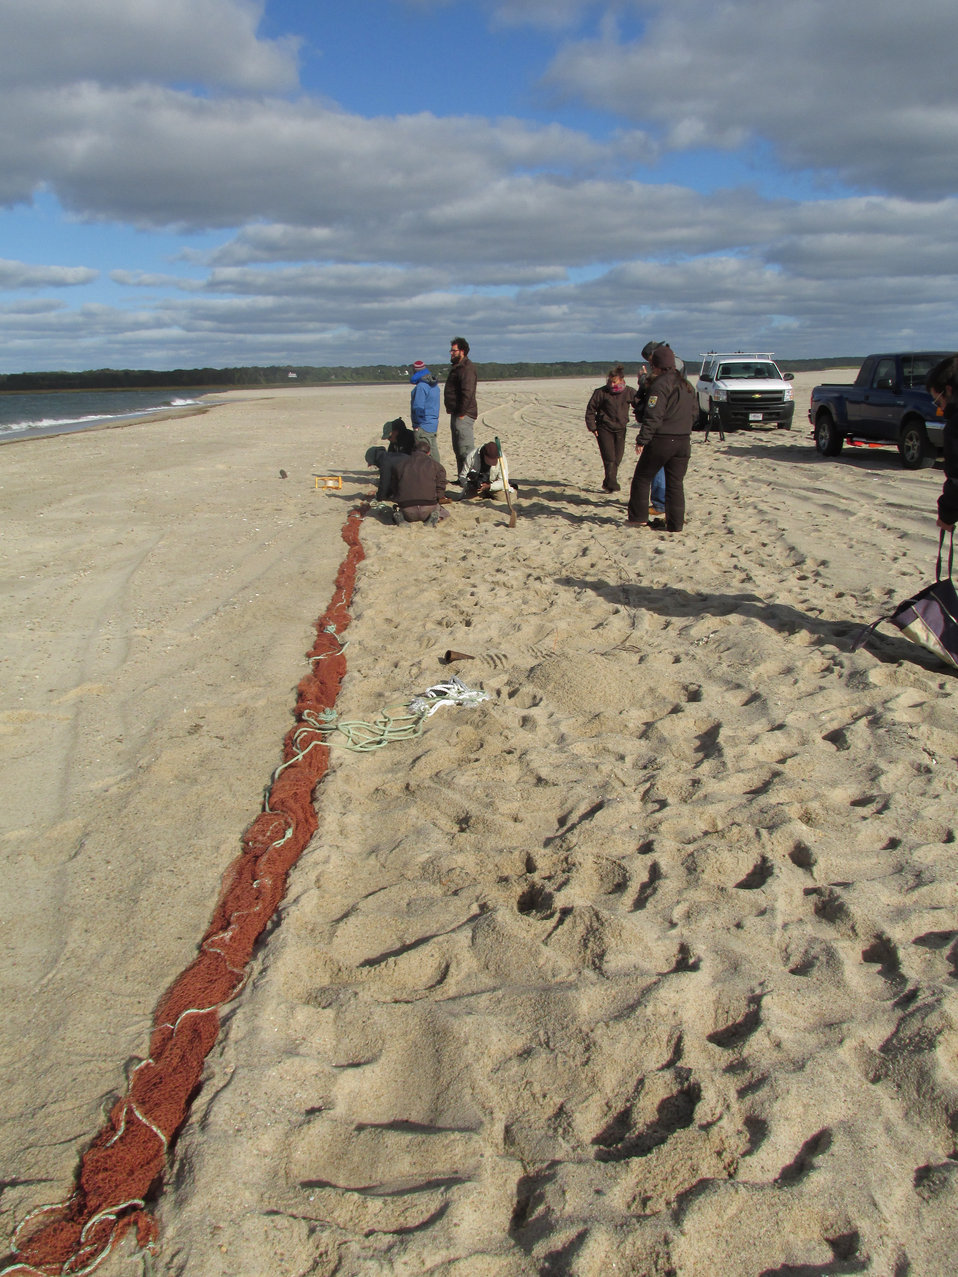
Red knot cannon-netting on Cape Cod

The cannon-netting team at the north end of Nauset Beach in Orleans/Eastham, Mass.